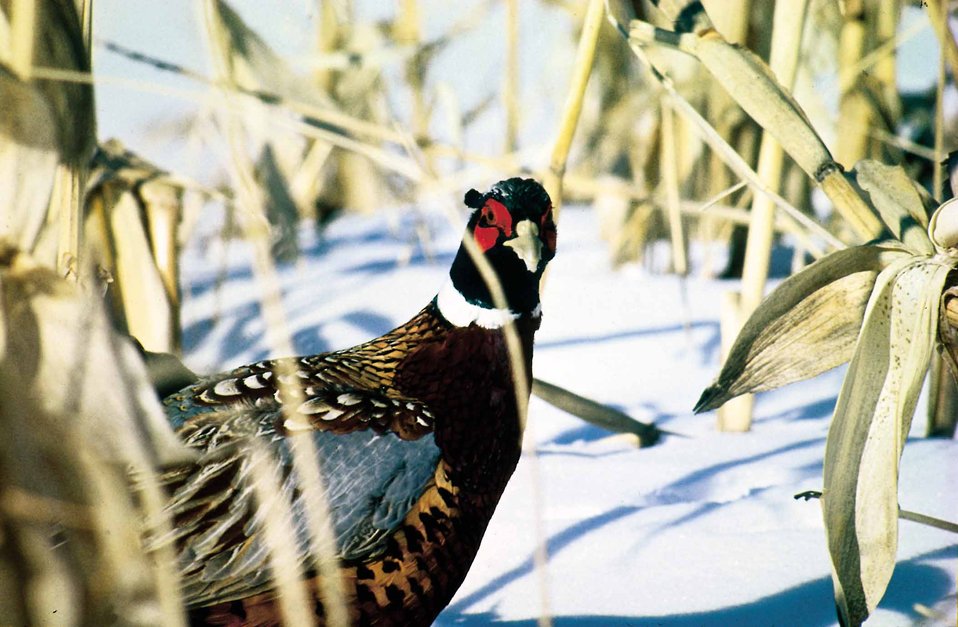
Ringneck pheasant.